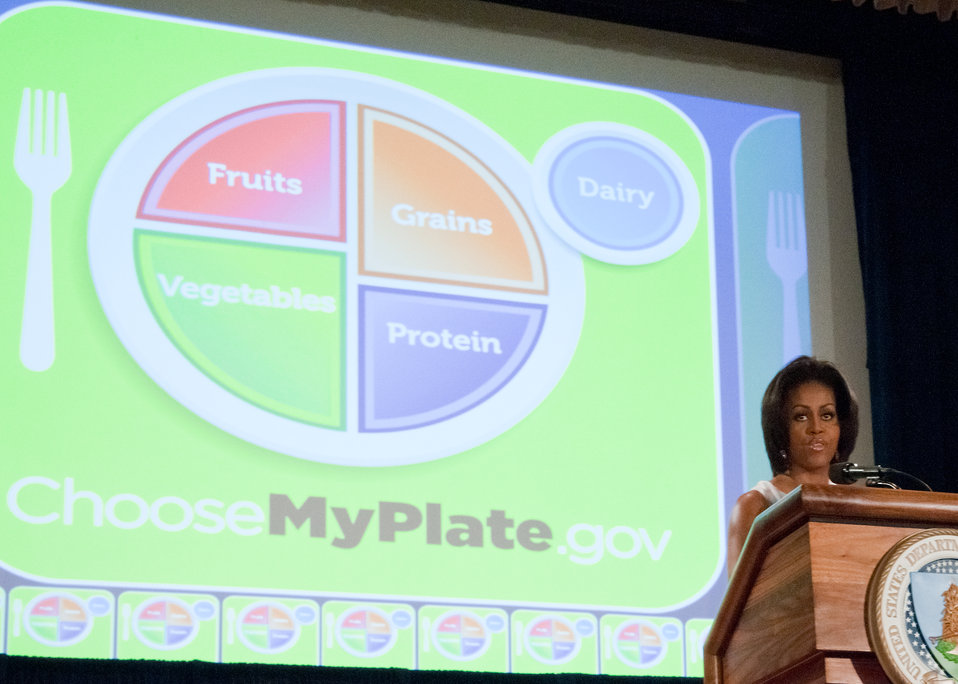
First Lady Michelle Obama unveiled the new food icon that will serve as a reminder to help consumers make healthier food choices at the United States Department of Agriculture (USDA), Thursday, June 2, 2011. The White House Child Obesity Task Force called for simple advice to consumers with information to help them make healthy food choices. As a result USDA has introduced the new food icon to replace the MyPyramid image representing the food guide pyramid as the government’s primary food group symbol.